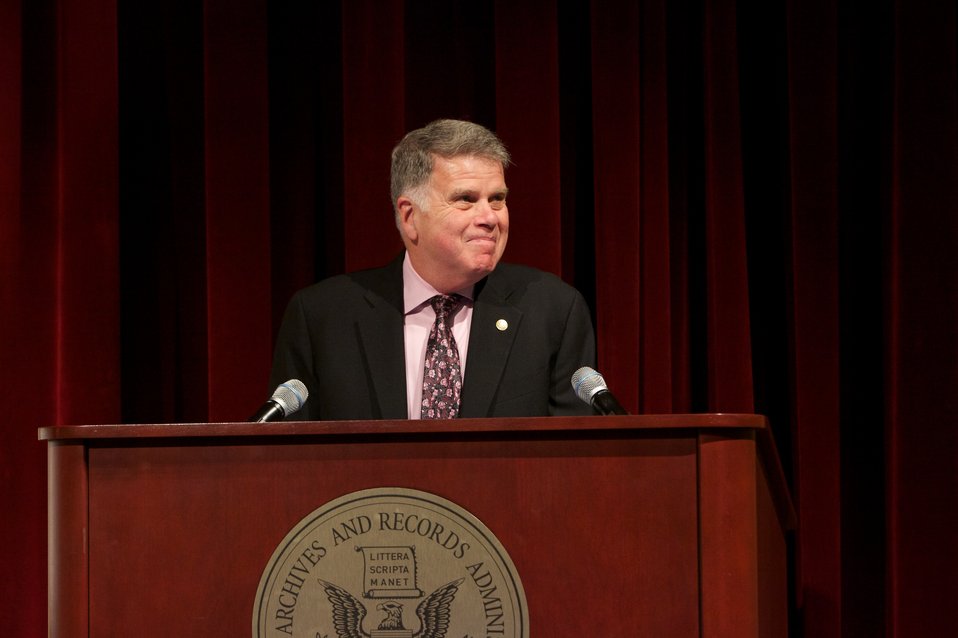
Jazz Diplomacy: Sending America's Music to the World